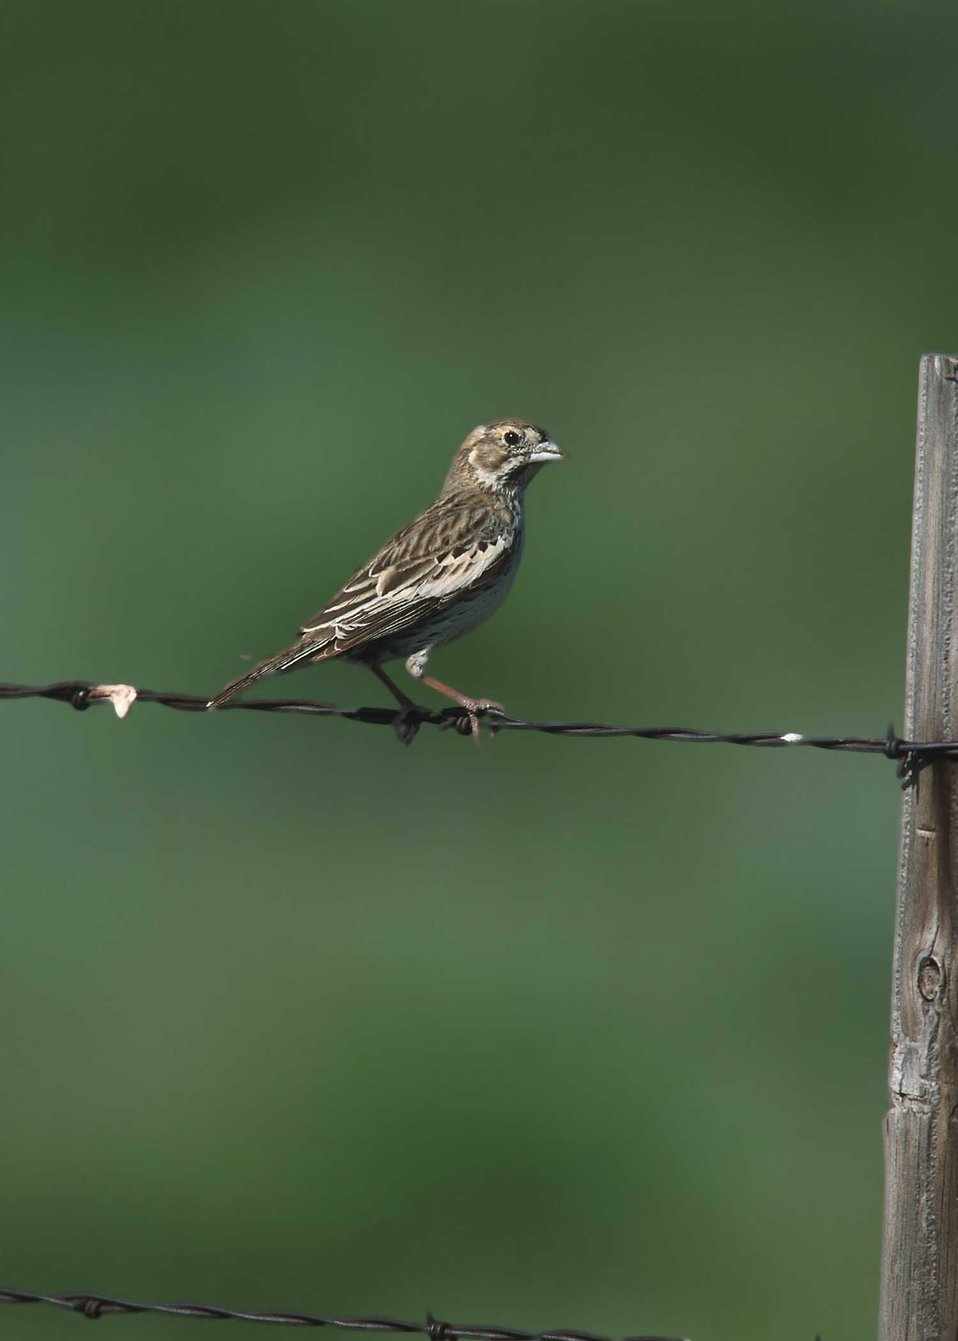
Female Lark Bunting, CO.